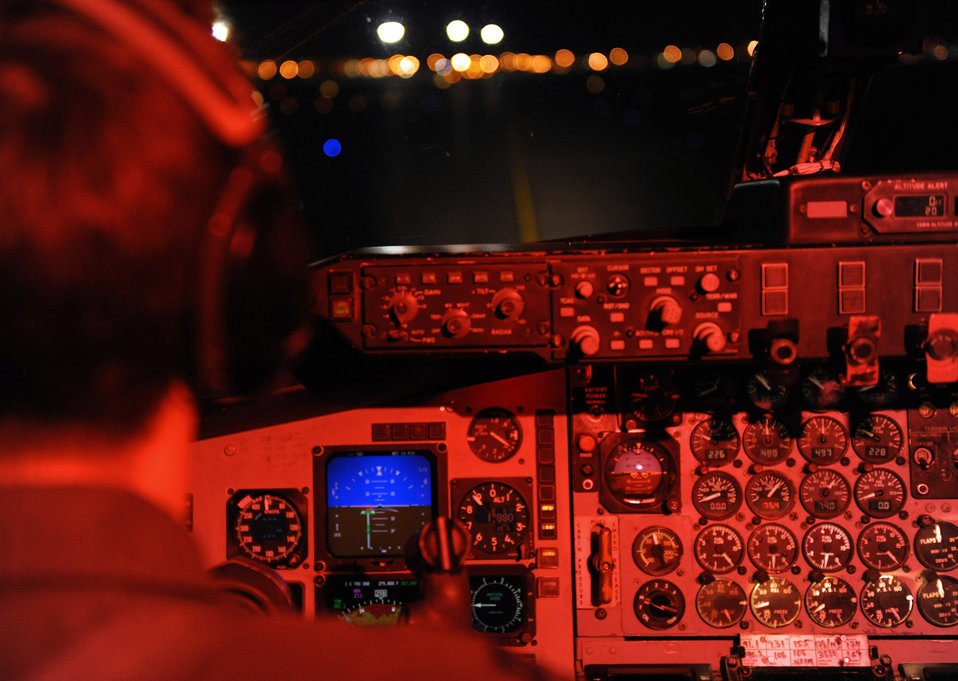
Ready for takeoff

Capt. Jason Merrill taxis his KC-135 Stratotanker to the runway for a night mission during Red Flag Feb. 3 at Nellis Air Force Base, Nev. Captain Merrill is assigned to the 905th Air Refueling Squadron at Grand Forks AFB, N.D.